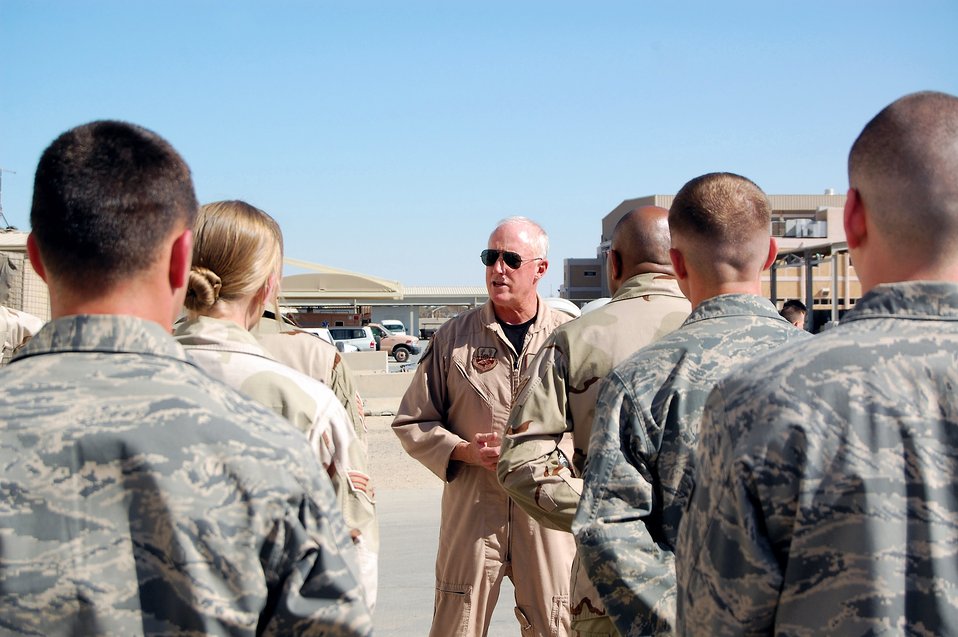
Air Forces Central general visits deployed Airmen

Brig. Gen. Thomas Haynes discusses deployed air mobility operations with Airmen during a March 8 visit to a Southwest Asia air base. General Haynes, the U.S. Air Forces Central director of mobility forces, visited the 386th Air Expeditionary Wing to see firsthand how Airmen support the deployed airlift mission.